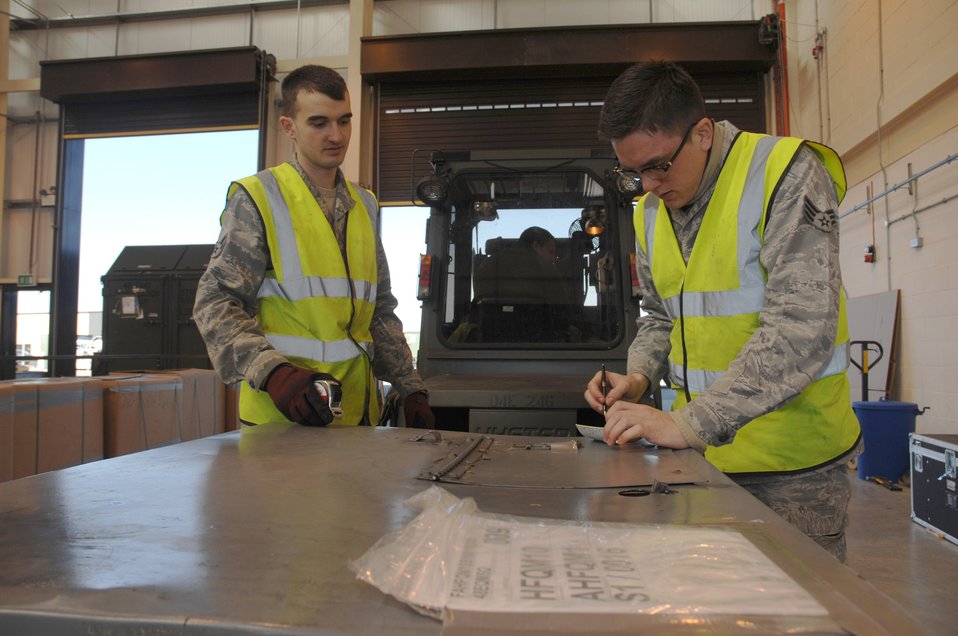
Odyssey Dawn

Senior Airman Daniel Glass, 48th Logistics Readiness Squadron, cargo marshaller records the dimensions of a CP-29 Low-Pack compressor from Airman 1st Class Ty Craiglow, 48 LRS, vehicle mechanic at RAF Lakenheath, England, March 19, 2011. Units from the 48th Fighter Wing are currently conducting pre-deployment procedures in support of Operation Odyssey Dawn. The 48th Fighter Wing provides all-weather, day or night air superiority and air-to-ground precision combat capability as well as combat search and rescue.